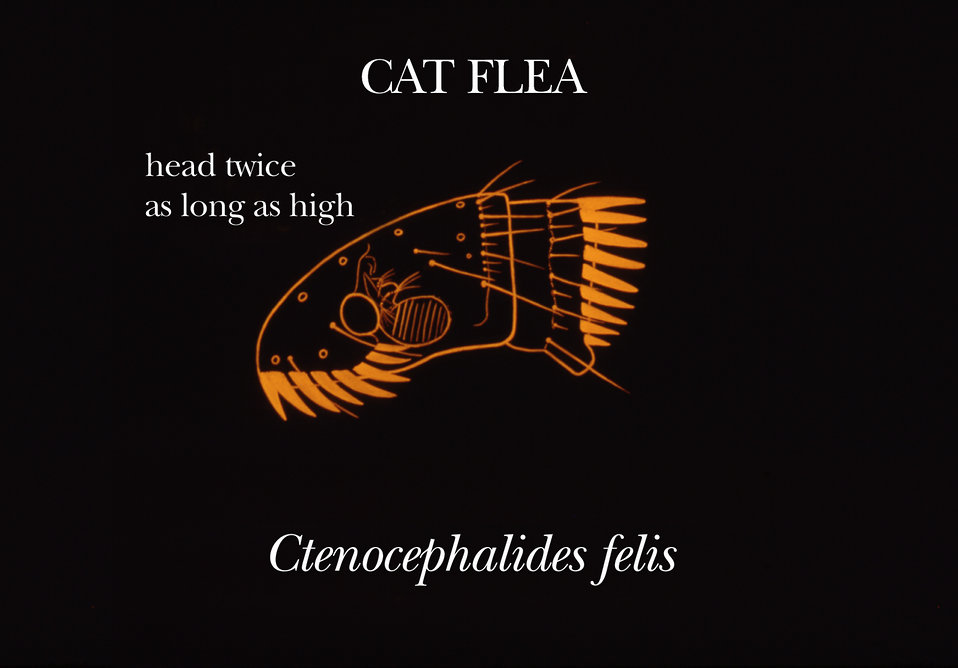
This diagram highlights the anatomic features of the head region of the 'cat flea', Ctenocephalides felis .